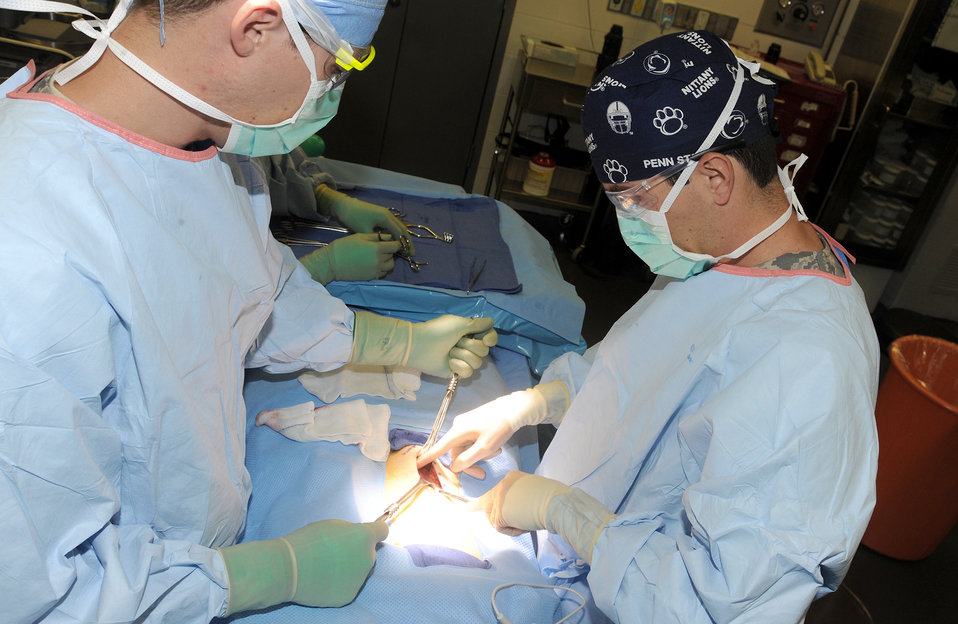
Mobile surgical teams

Staff Sgt. Jonathan Kertulis helps Dr. (Maj) Gustavo Lopes during an inguinal hernia repair surgery May 31, 2011, in Southwest Asia. The 379th Expeditionary Medical Group features a mobile-forward surgical team that is ready to respond to contingencies. When not forward deployed, the team performs routine procedures that allow deployed service members to stay in theater for care and recovery. Sergeant Kertulis is a surgical technician and Dr. Lopes is a general surgeon.